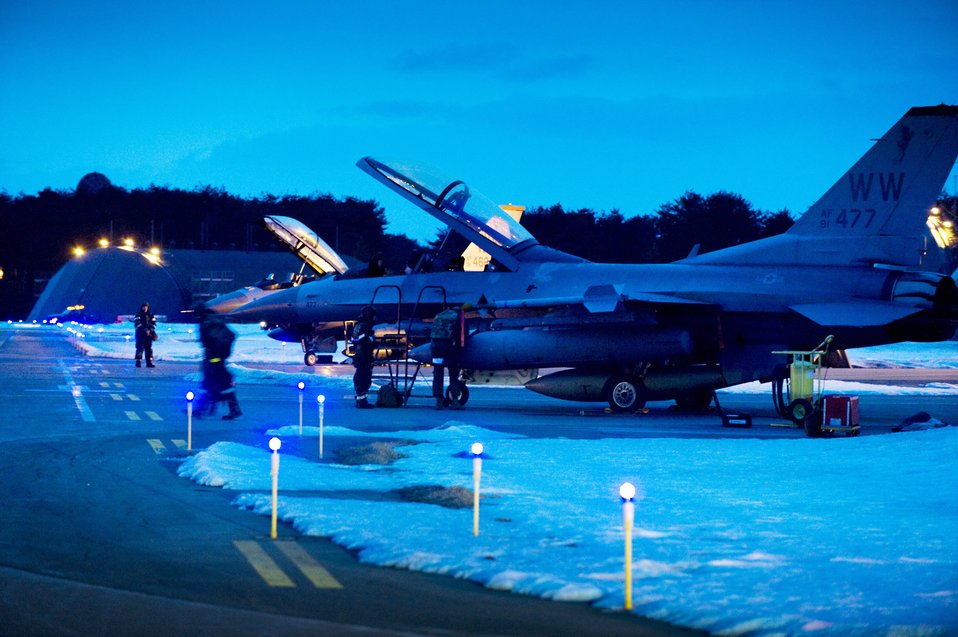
Misawa operations after dark

Maintenance crews ready two F-16 Fighting Falcons on the flightline at Misawa Air Base, Japan, for flight during an operational readiness exercise Feb. 1, 2010. These dual-seat models were used as aggressor aircraft to test pilots on how to evade or engage enemies.